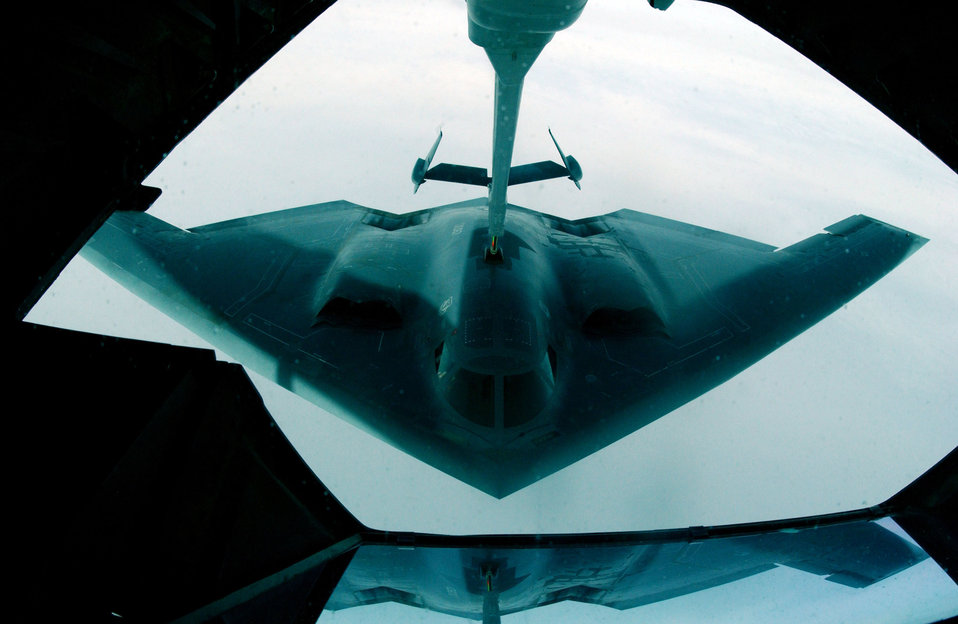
B-2s stay in shape with exercises

A B-2 Spirit bomber from the 393rd Expeditionary Bomb Squadron at Andersen Air Force Base, Guam, is refueled by a KC-10 Extender on Thursday, June 8, during Exercise Northern Edge 2006. B-2 pilots left Guam, completed a sortie at a training range approximately 4,500 nautical miles away in Alaska, and returned -- a 9,800 nautical-mile round trip lasting more than 24 hours.